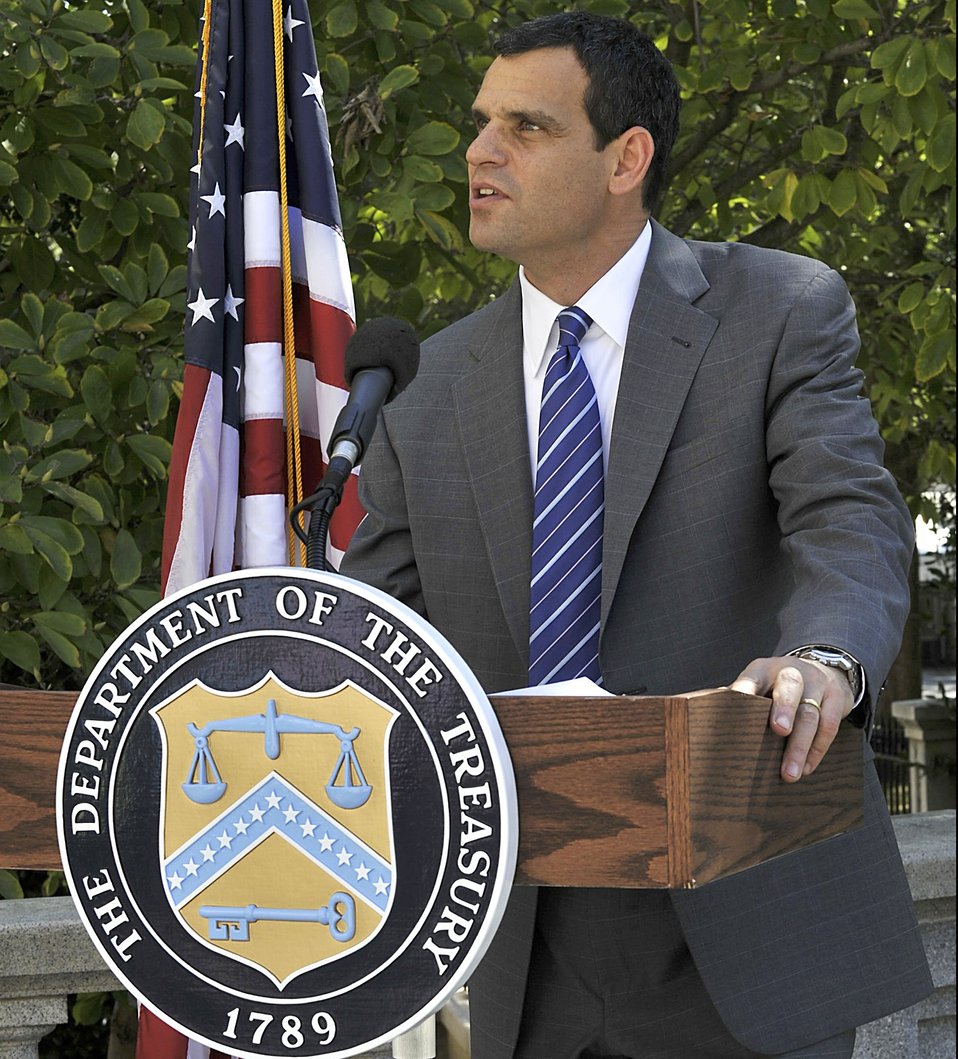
Under Secretary for Terrorism and Financial Intelligence David Cohen addresses his staff on the 9/11 anniversary